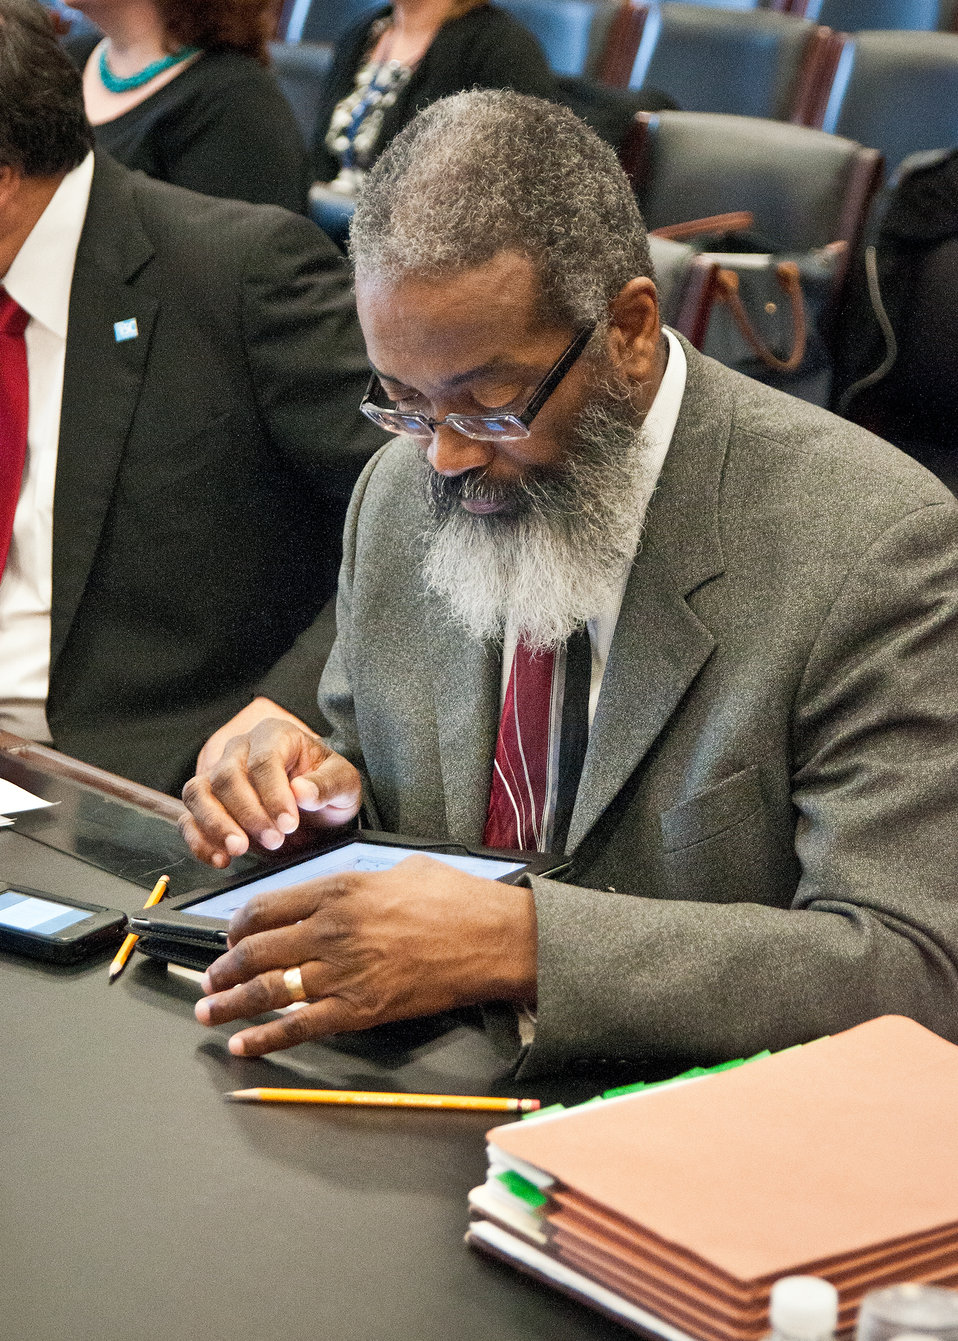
Dr. Gregory Parham, Administrator, Animal and Plant Health Inspection Service prepares talking points prior to testifying on Capitol Hill along with representatives of other Marketing and Regulatory Program agencies before the House Agriculture Appropriations Subcommittee on the agencies fiscal year 2013 budget requests in Washington, D.C., Tuesday, March 6, 2012.